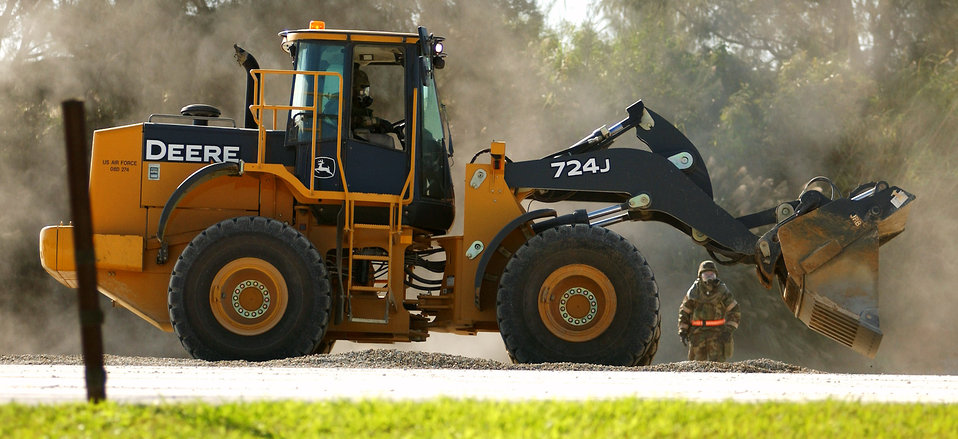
Airmen train for contingency operations during Silver Flag

Civil engineers practice reconstituting a damaged airfield following simulated air attacks during Silver Flag Nov. 24 at Kadena Air Base, Japan. During the exercise, which is run by Det. 1, 554th RED HORSE Squadron members, Airmen trained to establish and sustain a forward operating base in simulated wartime conditions.